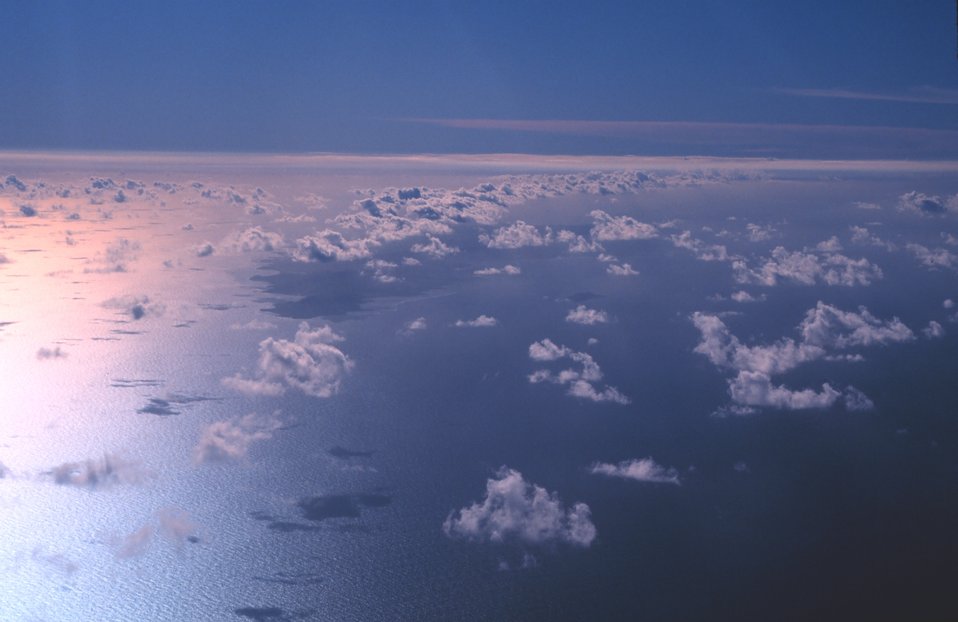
Tropical popcorn cumulus at sunset.